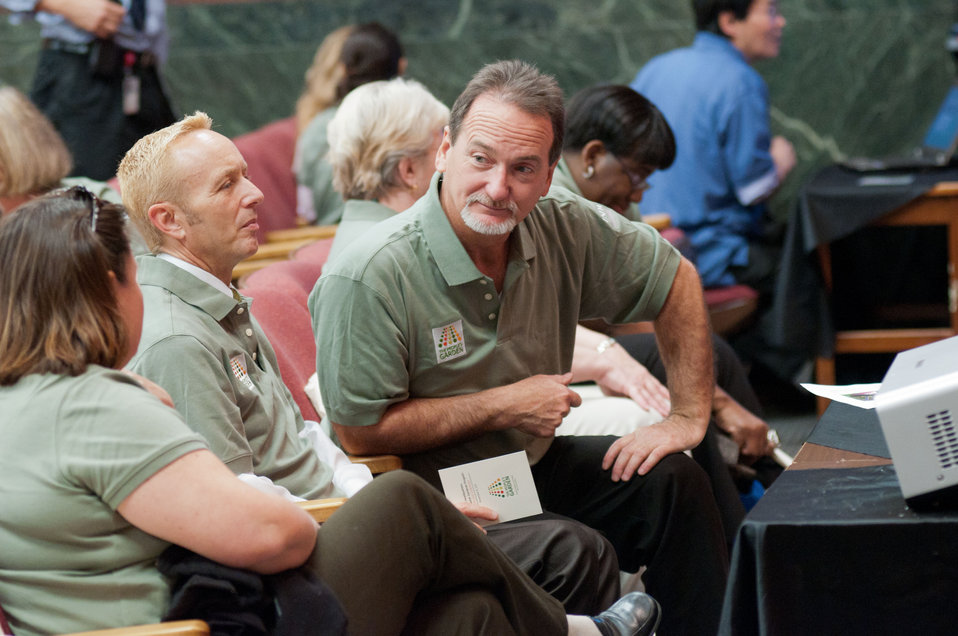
Graduation day of the 2011 U.S. Department of Agriculture (USDA) Executive Master Gardeners, on Tuesday, November 8, 2011 in Washington, DC. During the past six-weeks, students contributed 40-hours of volunteer time, completed studies and testing to receive their certificates today as an Executive Master Gardener. Many of the sessions occurred before work hours, during lunchtime or at community garden project sites such as Powell Middle School. USDA challenges its employees to establish People's Gardens at USDA facilities worldwide or in community gardens. People's Gardens vary in size and type, but all have a common purpose - to help the community and the environment. To learn about the People’s Garden Initiative visit www.usda.gov/wps/portal/usda/usdahome?contentid=peoples g....